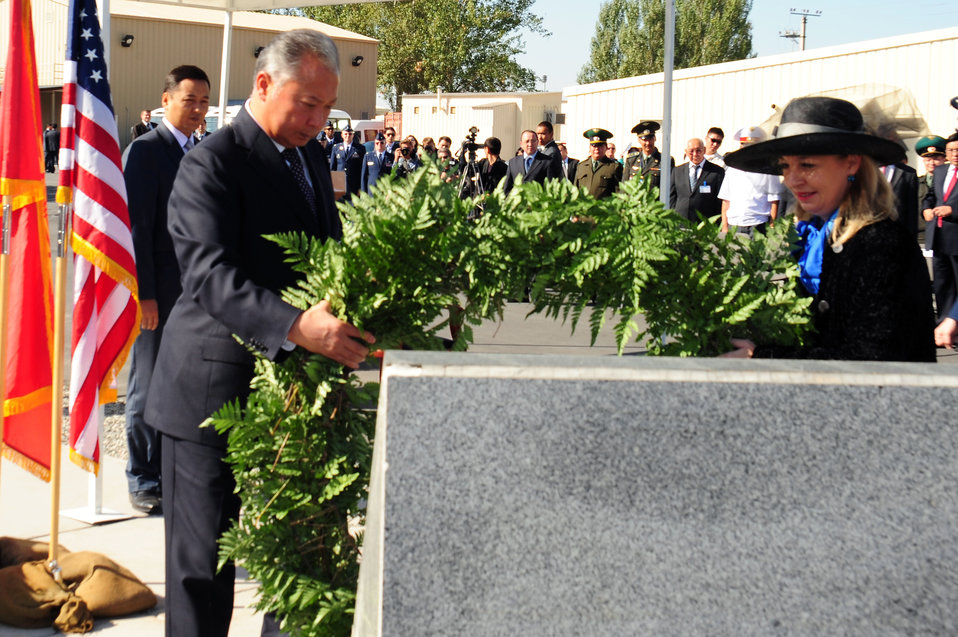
Deployed Airmen honor 9/11 with Kyrgyz president

Kyrgyz President Kurmanbek Bakiyev and American Ambasador to Kyrgyzstan Tatiana Gfoeller lay a wreath at the Sept. 11 Memorial Sept. 11, 2009, at the Transit Center at Manas, Kyrgyzstan. President Bakiyev honored those who lost their lives in 2001 with a few words of friendship between Kyrgyzstan and the U.S.